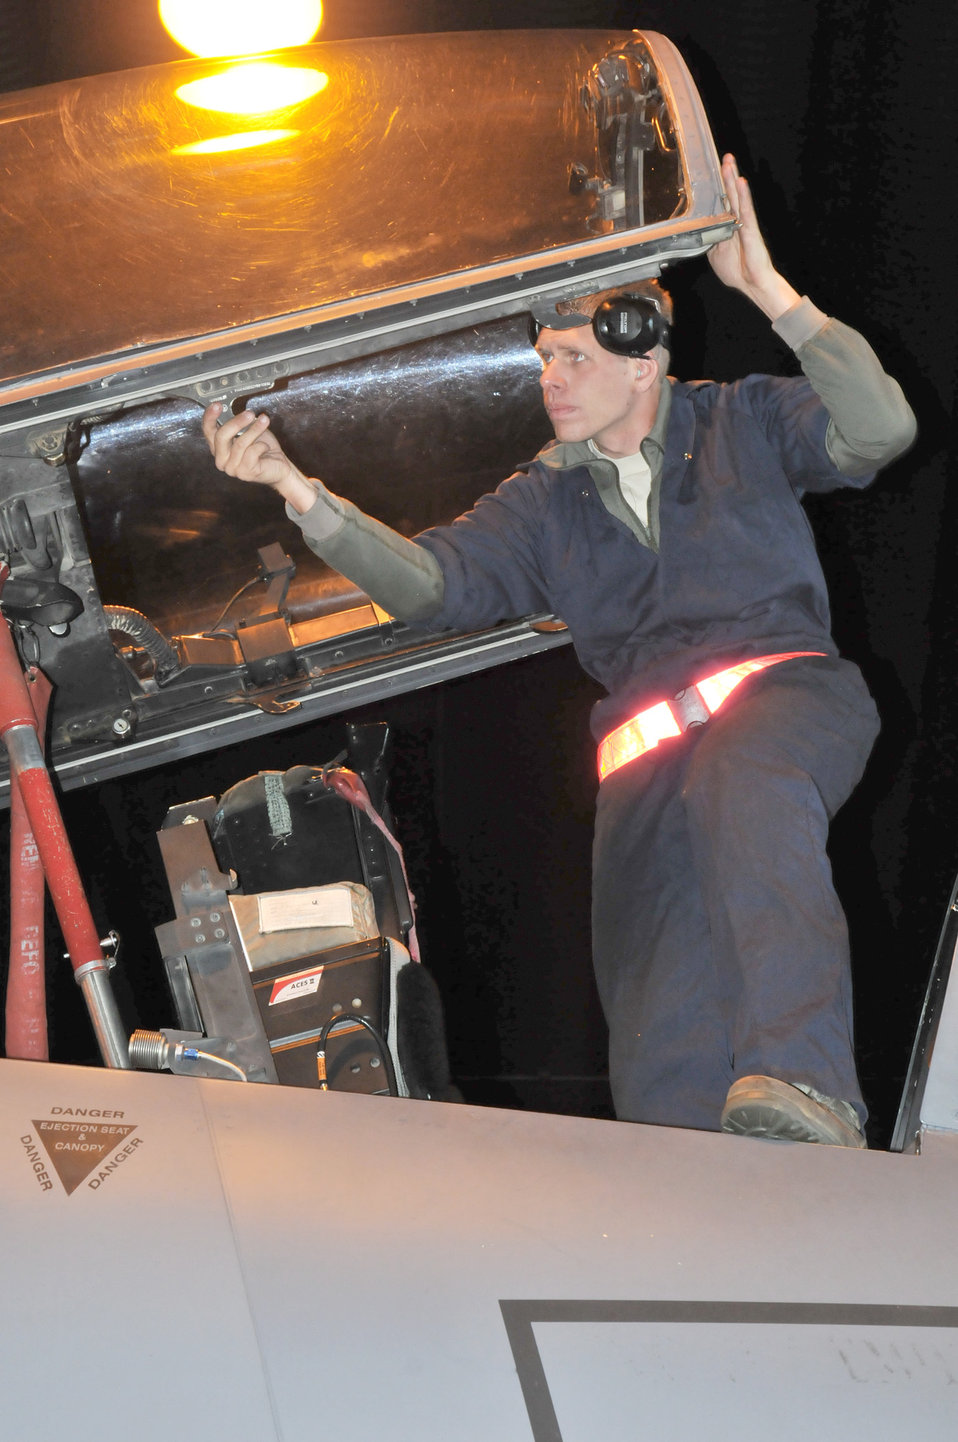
Lakenheath set-piece demonstration

Staff Sgt. Jason Siler checks the canopy of an F-15E Strike Eagle during a set-piece demonstration Oct. 7, 2010, at Royal Air Force Lakenheath, England. Sergeant Siler and four other team members were tasked with checking, refueling and rearming an aircraft within three hours. Sergeant Siler is a member of the 48th Maintenance Group.